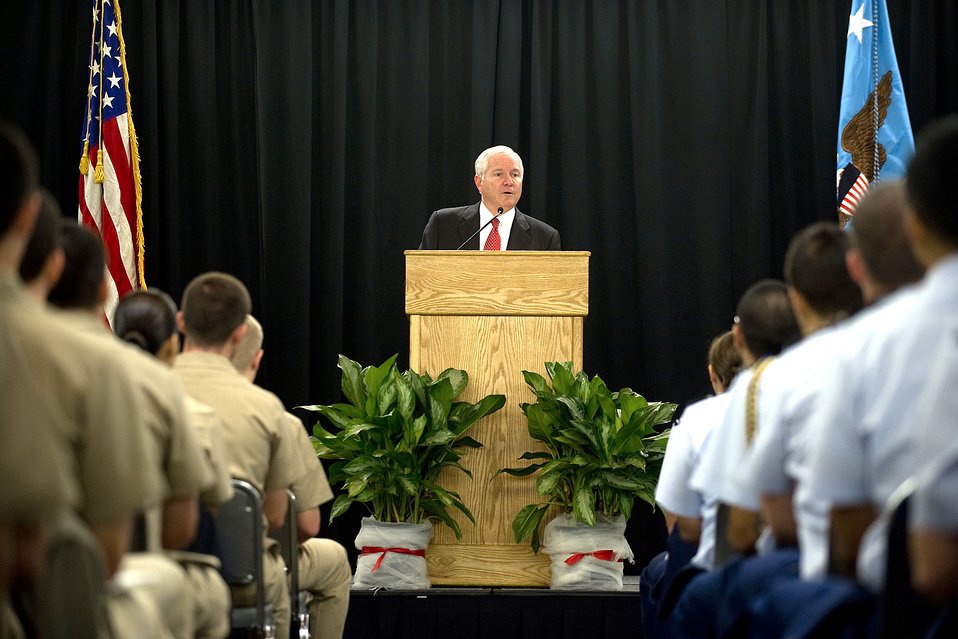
Sec Gates at Duke

Defense Secretary Robert M. Gates speaks to ROTC Cadets Sept. 29, 2010 from Duke University, University of North Carolina, North Carolina State, and North Carolina Central University at Duke University, N.C.